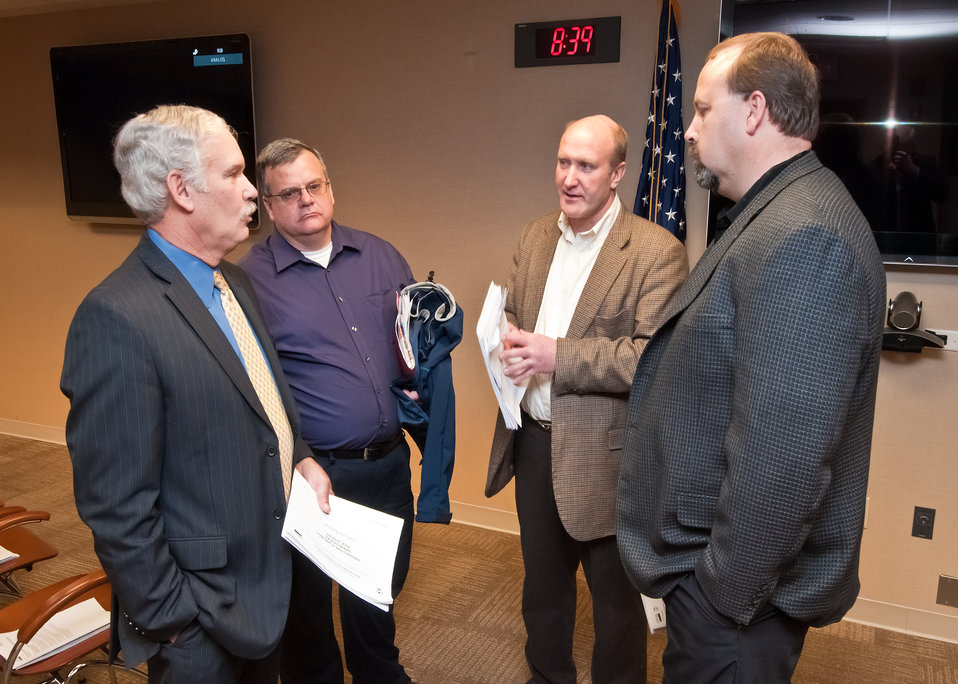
From left: Michael Scuse ; Undersecretary; Farm and Foreign Agricultuaral Services, Pat Solon, Streator, Illinois, Pat Duncanson, Duncanson Growers, Mapleton, Minnesota and Dan Anderson, Anderson Wheat Farms, Haxton, Colorado discuss the agricultural economy after the release of the United States Department of Agriculture’s, National Agricultural Statistics Service, March Agricultural Survey to USDA cabinet members, agricultural journalist, guest farmers, NASS employees and interns at the USDA, NASS Lockup in Washington, DC, Thursday, March 31, 2011. The NASS lockup is agricultural commodity information held until the Secretary of Agricultural or Secretary’s Designee has signed and released the information. Undersecretary Scuse signed as the Secretary of Agriculture’s designee releasing the information. The signing is the official act of recognizing the information as an official USDA document.